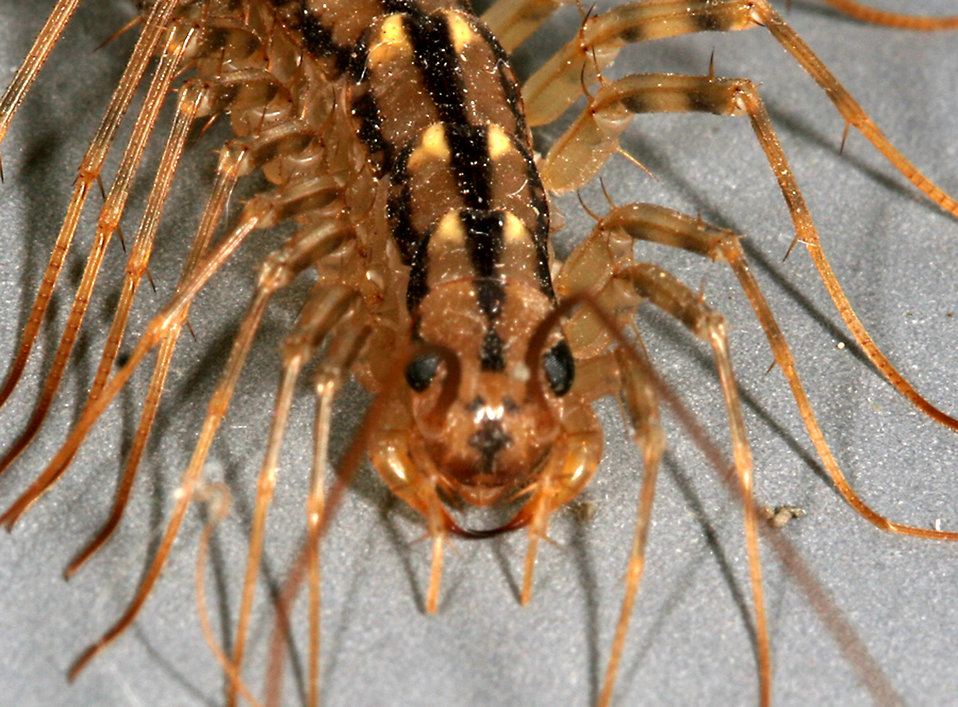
Photographed by Harvard University, Dept. of Environmental Health and Safety entomologist/environmental biologist, Dr. Gary Alpert, this 2006 image depicted a anterosuperior view of a common house centipede, Scutigera coleoptrata. Each segment of a centipede's body possesses a single pair of legs. Emanating from the head is a pair of sensorial antennae, and its three pairs of mouthparts, consisting of paired mandibulae with teeth, maxillae, and palps. Emanating from just behind its head, and visible in this image, is this arthropod's first pair of legs which has evolved into a pair of fangs. Although a rare occurrence, when it does bite its victims, the centipede ejects its venom, which is not generally toxic, although it may cause extreme pain to humans.